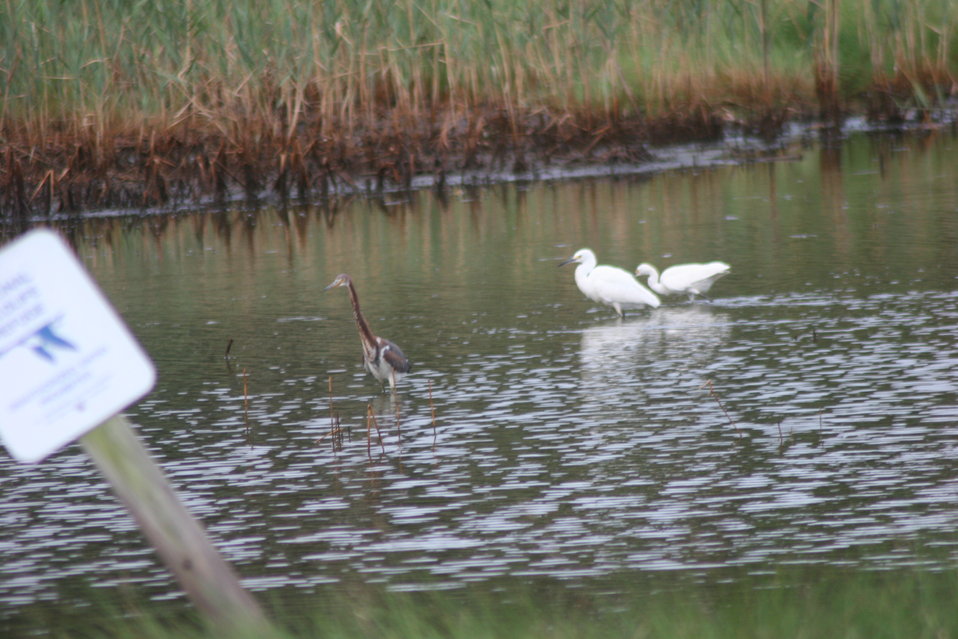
Shorebirds at Prime Hook NWR